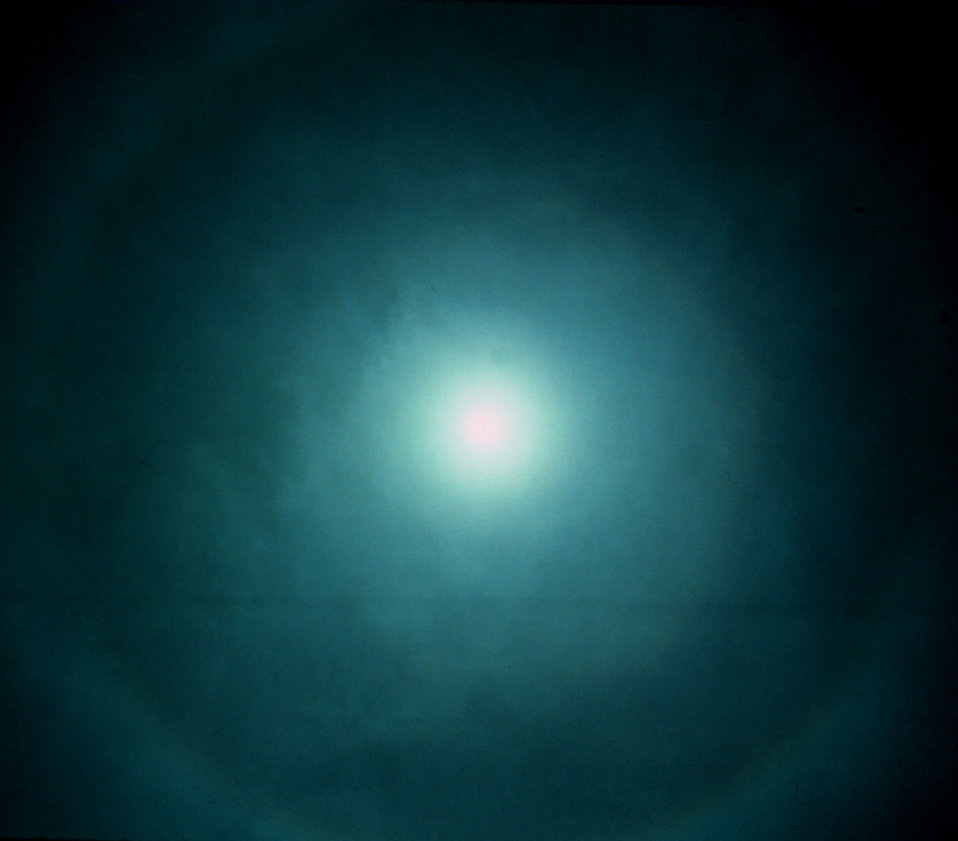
Halo at 22 1/2 degrees around overhead sun